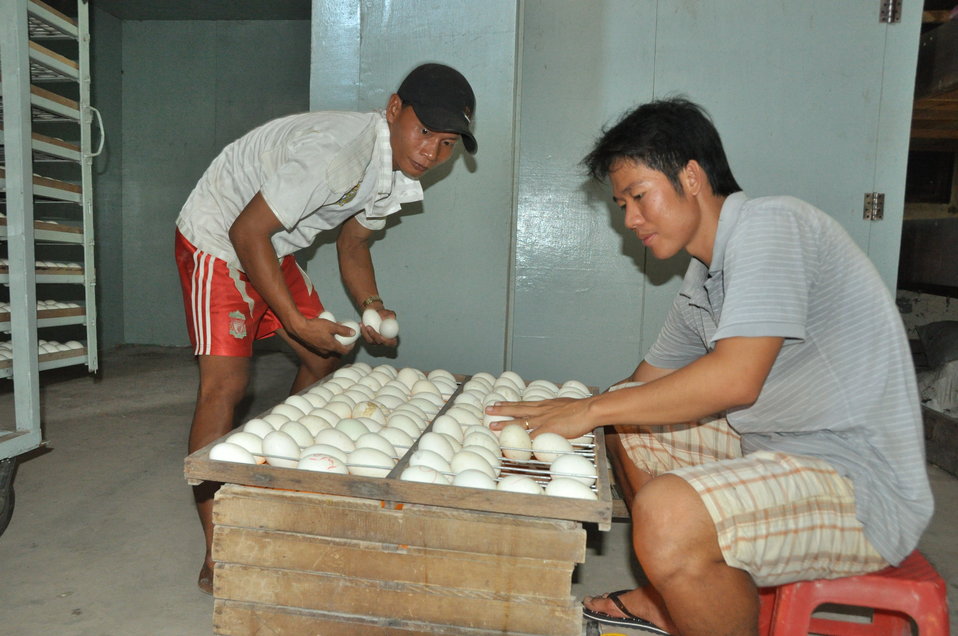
Mr. Thien inspects egg at his duck hatchery in Can Tho

USAID Vietnam